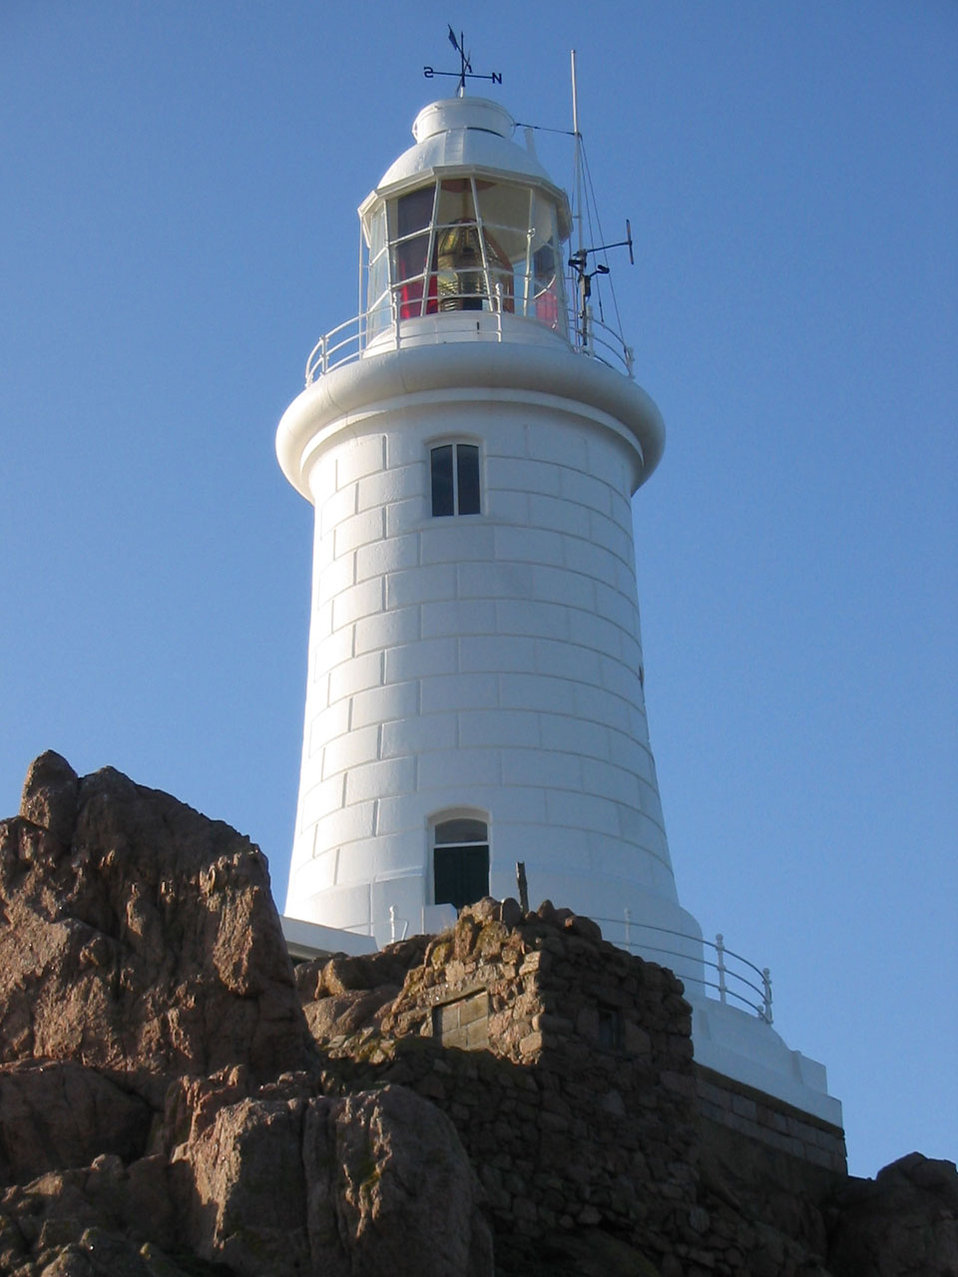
La corbiere on south-western point of jersey in st. brelade..